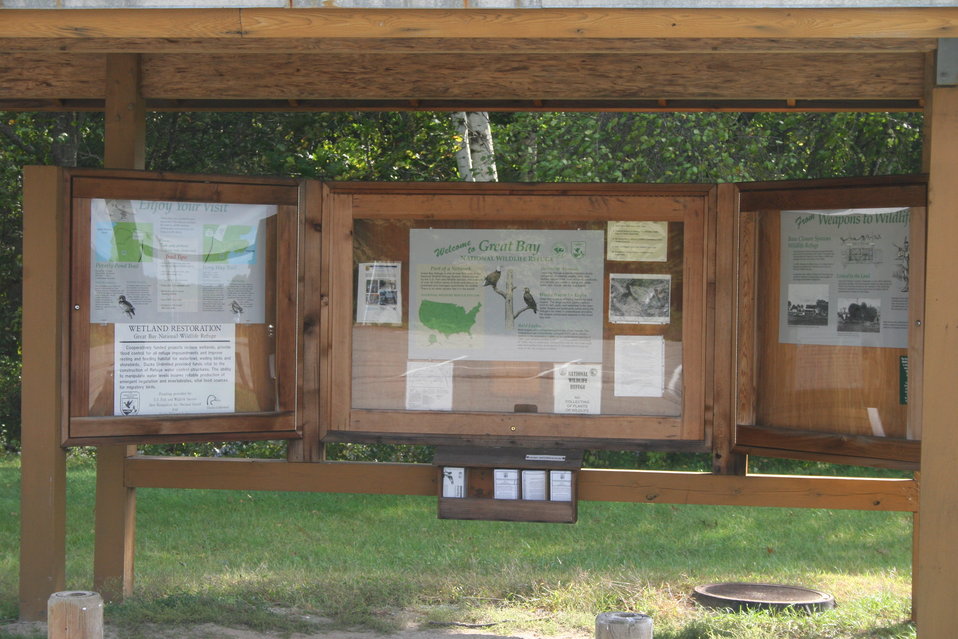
Information kiosk at Great Bay National Wildife Refuge, Newington, NH.